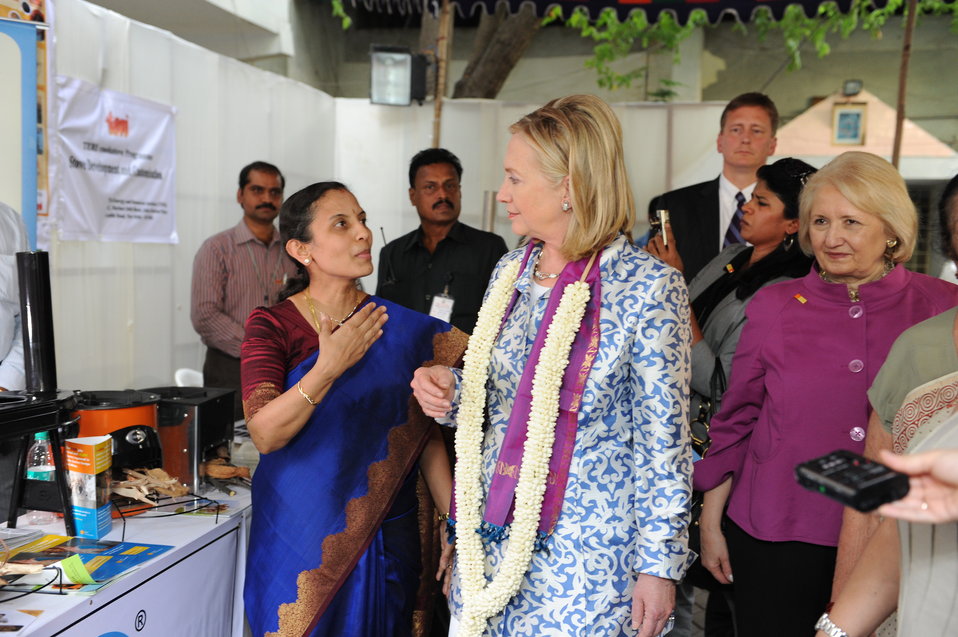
Dr. Balakrishnan Describes How the Clean Cookstoves Function to Secretary Clinton and Ambassador Verveer

Dr. Kalpana Balakrishnan of Sri Ramachandra University describes how the clean cookstoves on display function to U.S. Secretary of State Hillary Rodham Clinton, center, and U.S. Ambassador-at-Large for Women’s Issues Melanne Verveer, right, in Chennai, India, on July 20, 2011. [Paul Cohn/ State Department photo]